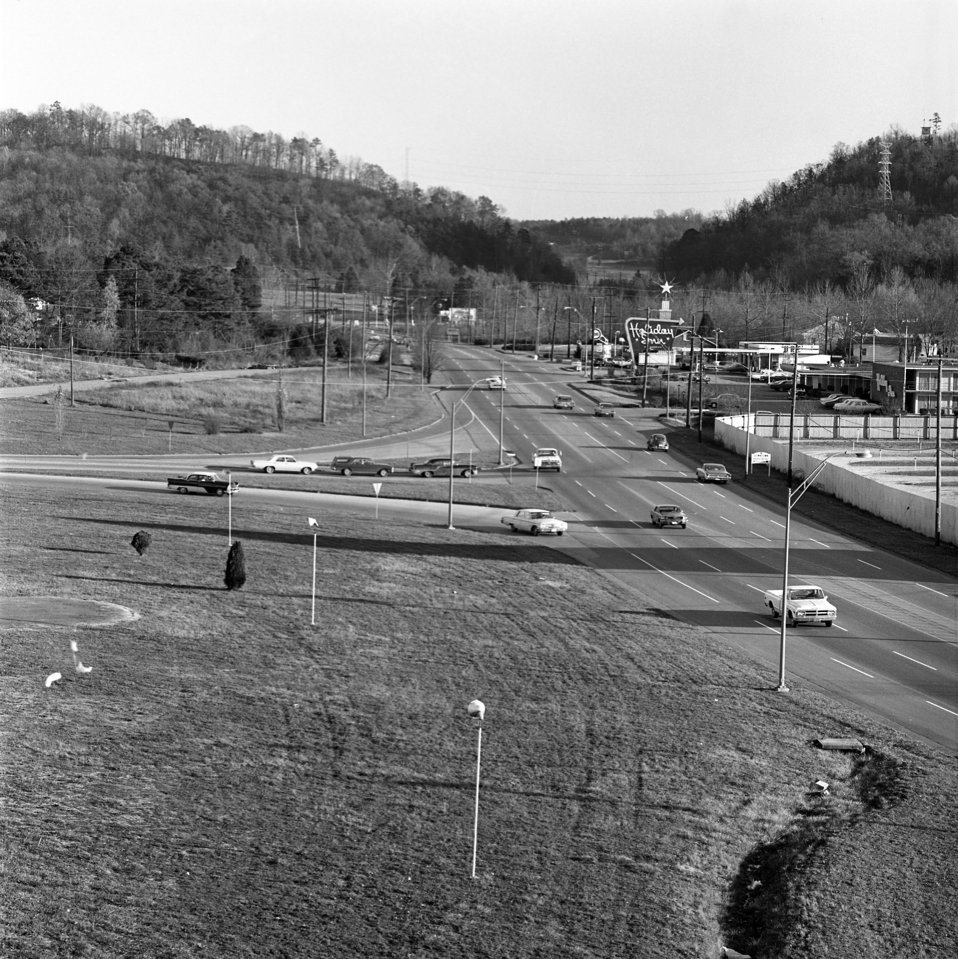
Illinois Ave. Oak Ridge 1968

68-582a DOE photo Frank Hoffman 11-26-1968 Oak Ridge Tennessee